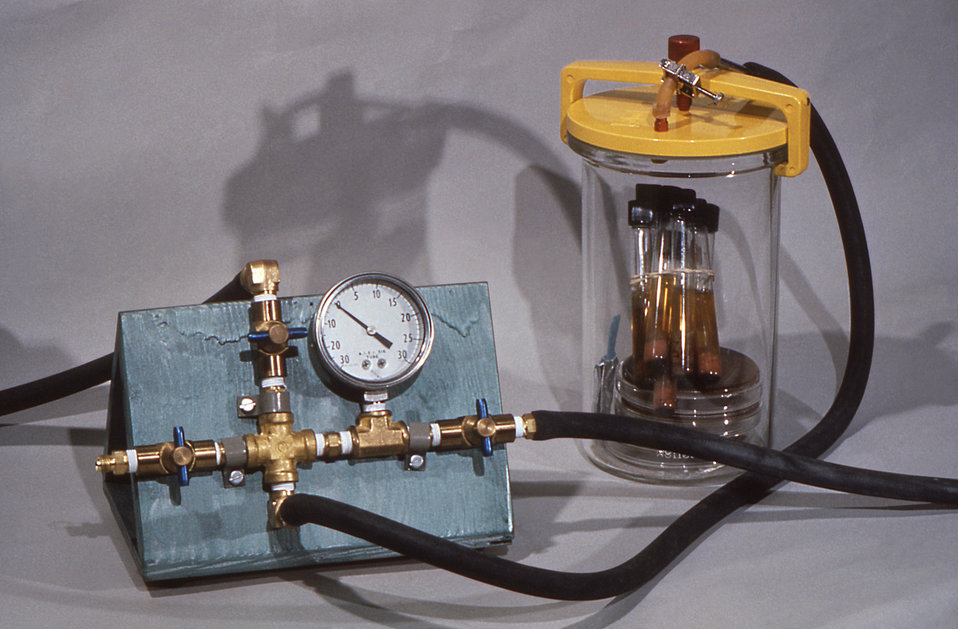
This 1975 image depicts a laboratory apparatus still life that included an air-tight, yellow-topped Gas-Pak jar containing tubes and Petri dish culture plates, and a pressure monitoring gauge, which had been connected to the jar using black rubber tubing.